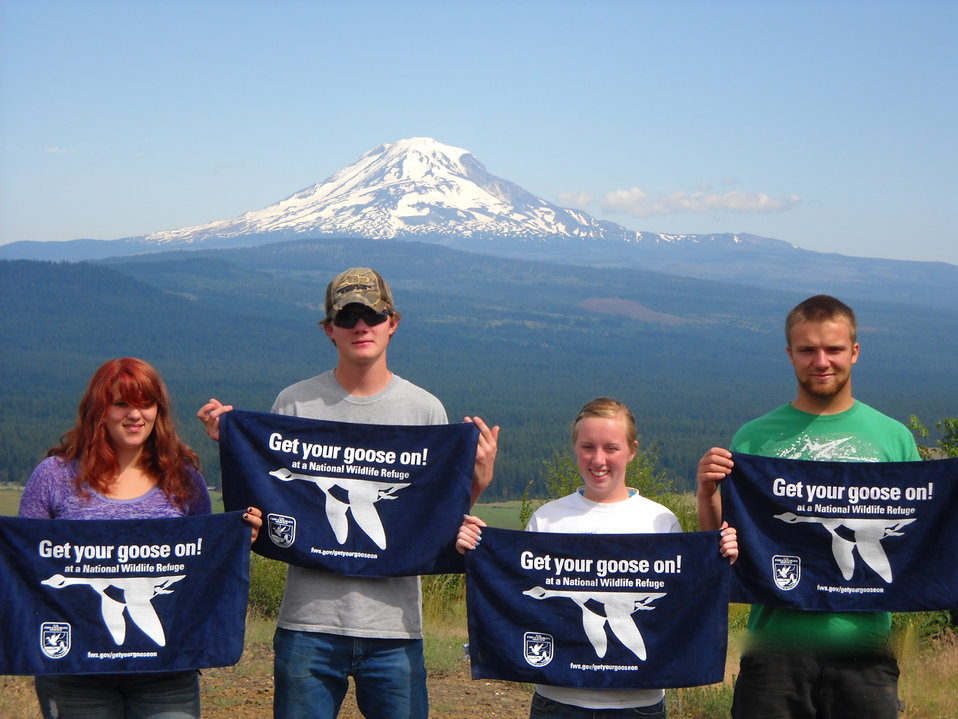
Get Your Goose On! - Mt. Adams Style

Youth Conservation Corps from Conboy Lake NWR, WA with Mt. Adams in the background.